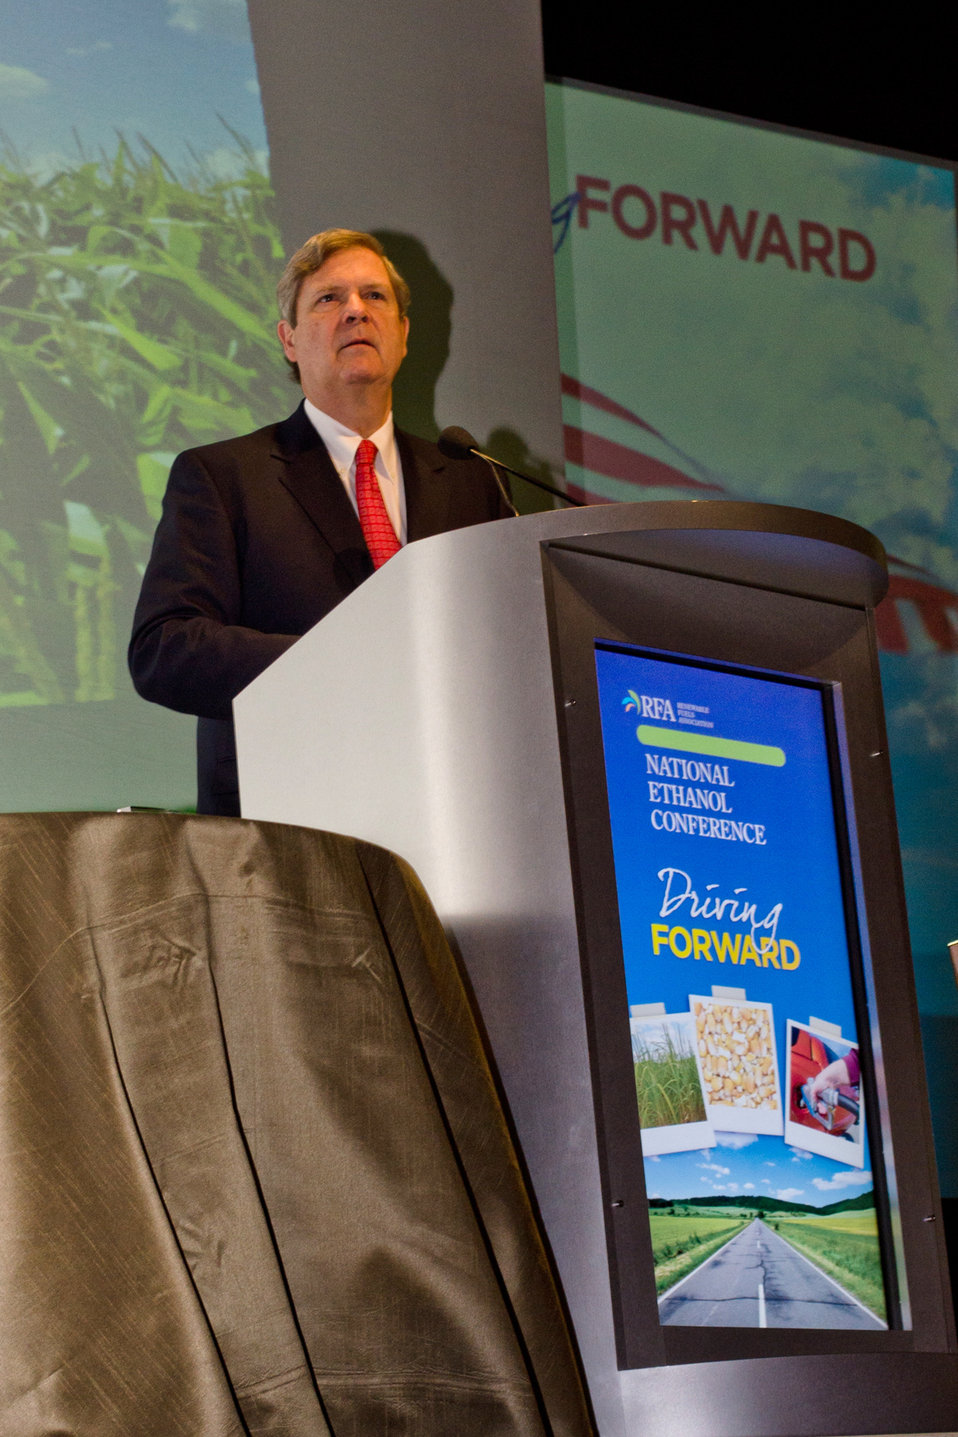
Agriculture Secretary Tom Vilsack speaks at the Renewable Fuels Association’s 18th Annual Ethanol Conference in Las Vegas, NV on Feb. 7, 2013. Secretary Vilsack discussed the unlimited opportunity for America to produce more homegrown energy through the development and innovation of advanced biofuels and the significant contributions biofuels and other biobased products have made to America’s economic and energy security, as well as the importance of supporting the industry through research, investment and increased collaboration.